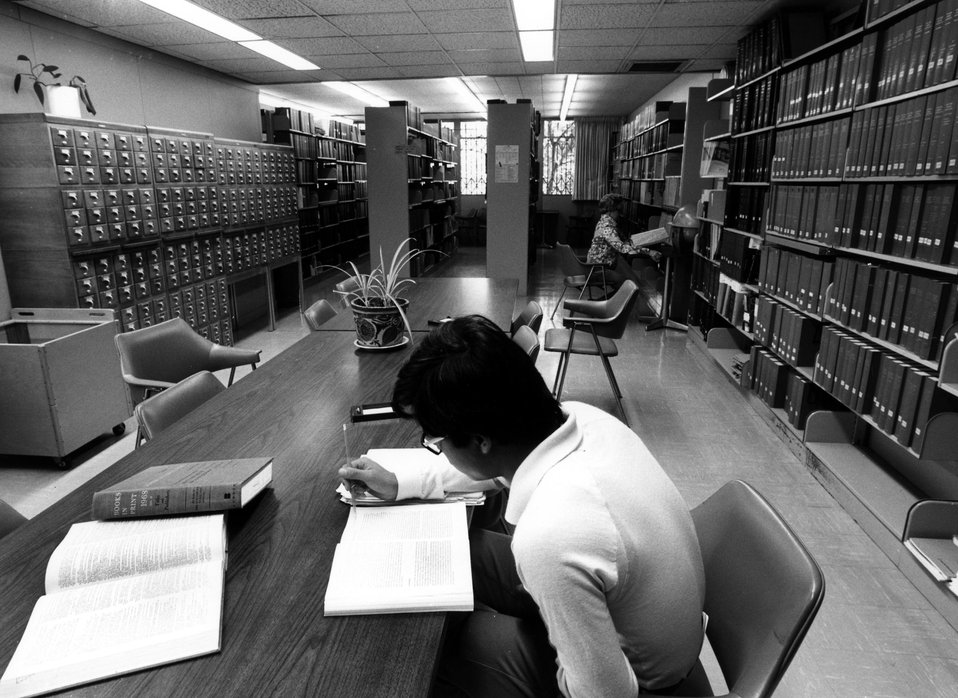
Library of Nuclear Medicine and Radiation Biology, located near other UCLA campus libraries.